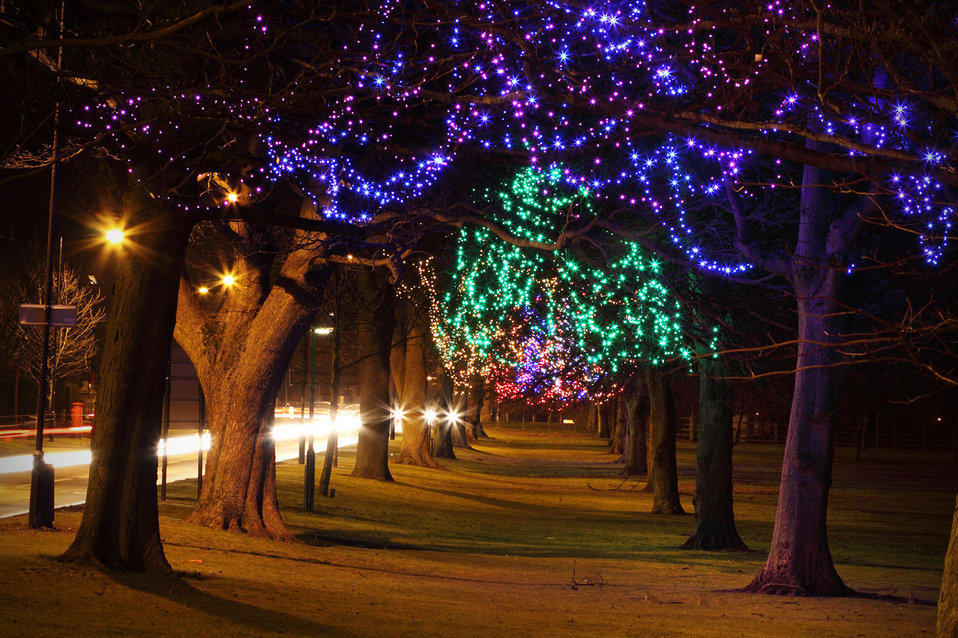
Decorated trees

Trees in the park at winter time.